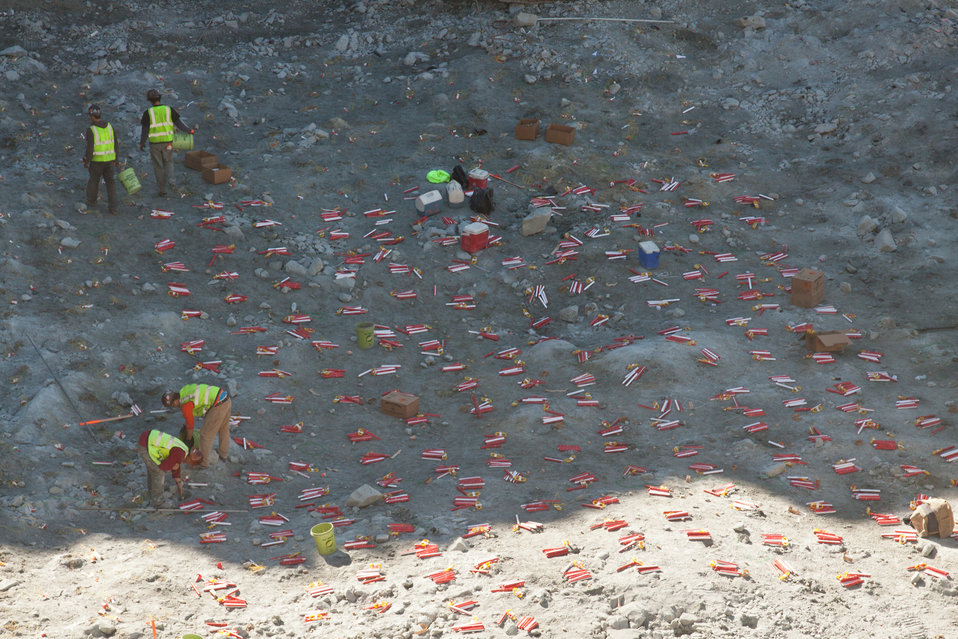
Blasting away for a new auxiliary spillway at Folsom Dam

Crews place explosive charges at the excavation site for the Folsom Dam auxiliary spillway in Folsom, Calif., Feb. 10, 2012. Crews detonate explosive charges daily to loosen bedrock for removal. To date, they've removed about 75 percent of the more than 315,000 cubic yards of earth that remains to be excavated. In total, 3.5 million cubic yards (about 175,000 large truckloads) of excavation is required. The Sacramento District is scheduled to complete blasting in May 2012 in preparation to construct the spillway's control structure, essentially a second dam. The spillway is scheduled to be ready for use in 2017 and will allow Folsom Dam to release water sooner and more safely, helping reduce flood risk for the Sacramento region.